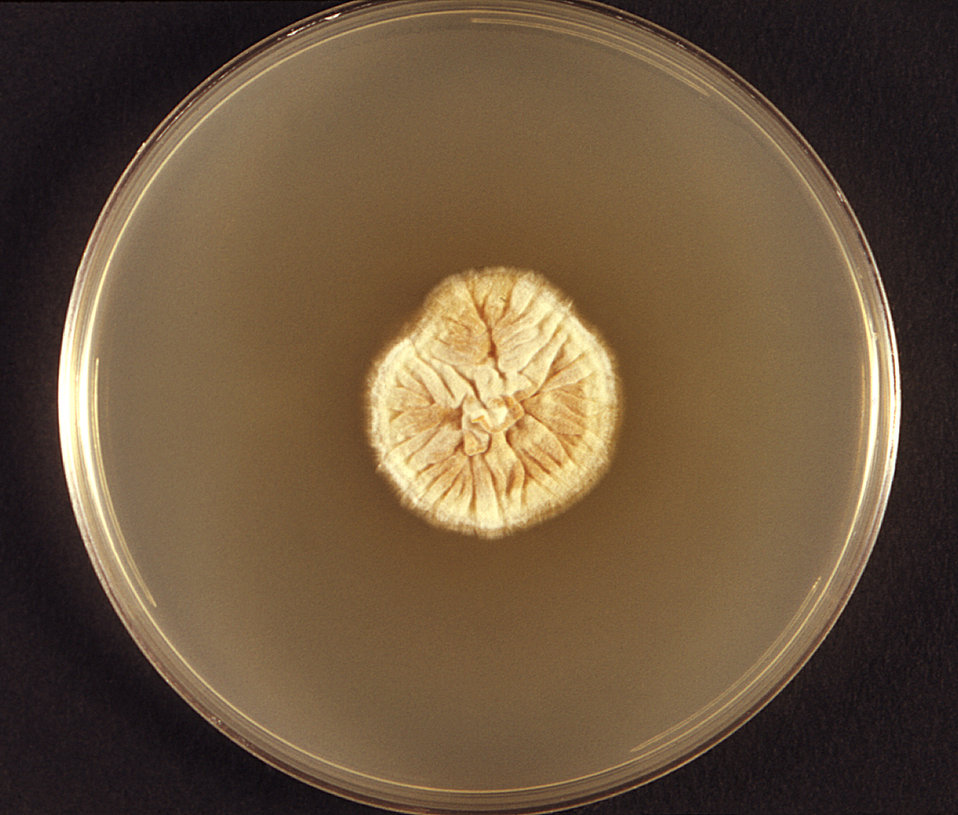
This photograph featured a Petri dish, which had been used to culture a colony of dermatophytic fungus, Trichophyton soudanense. In this particular frontal view, the colony exhibited a ruffled or wrinkled appearance, and its edges were feathered. It also displayed a tan to brownish coloration.